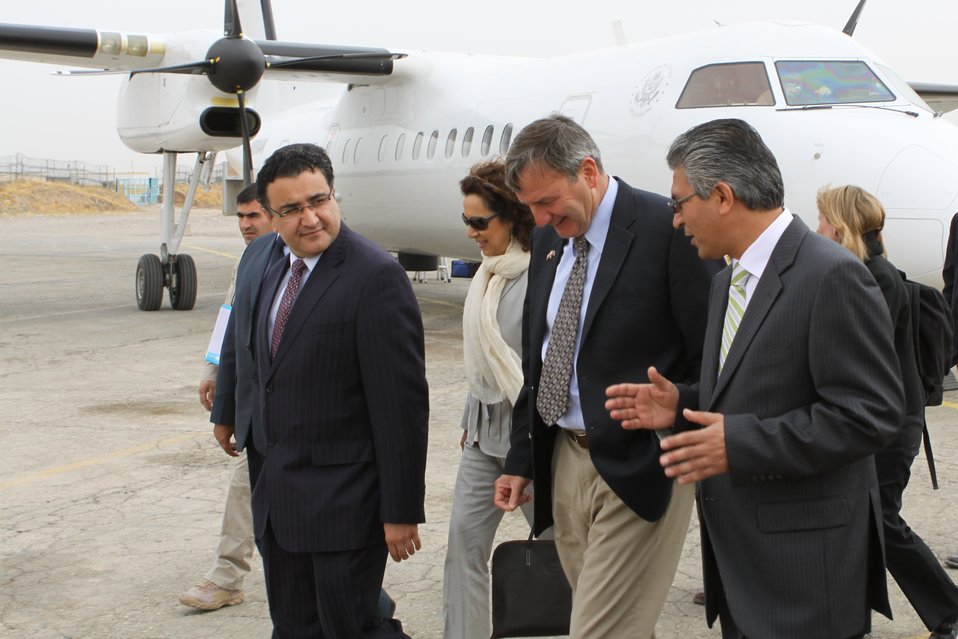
100525 Hirat Marble Conference 036